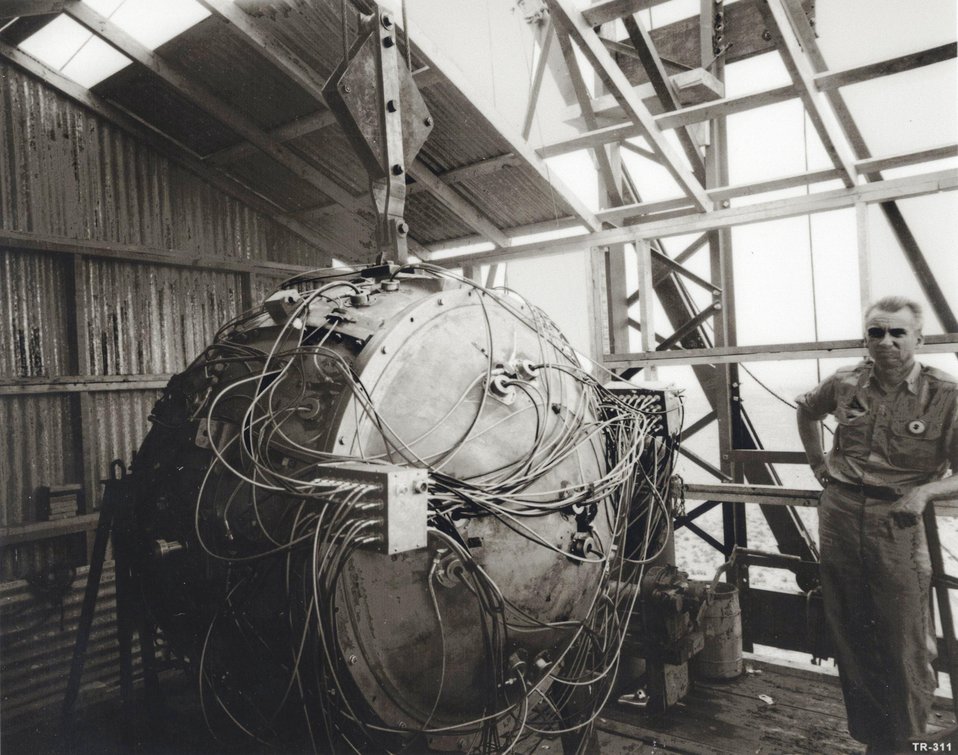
BRADBURY AND OPPENHEIMER BRADBURY NEXT TO GADGET